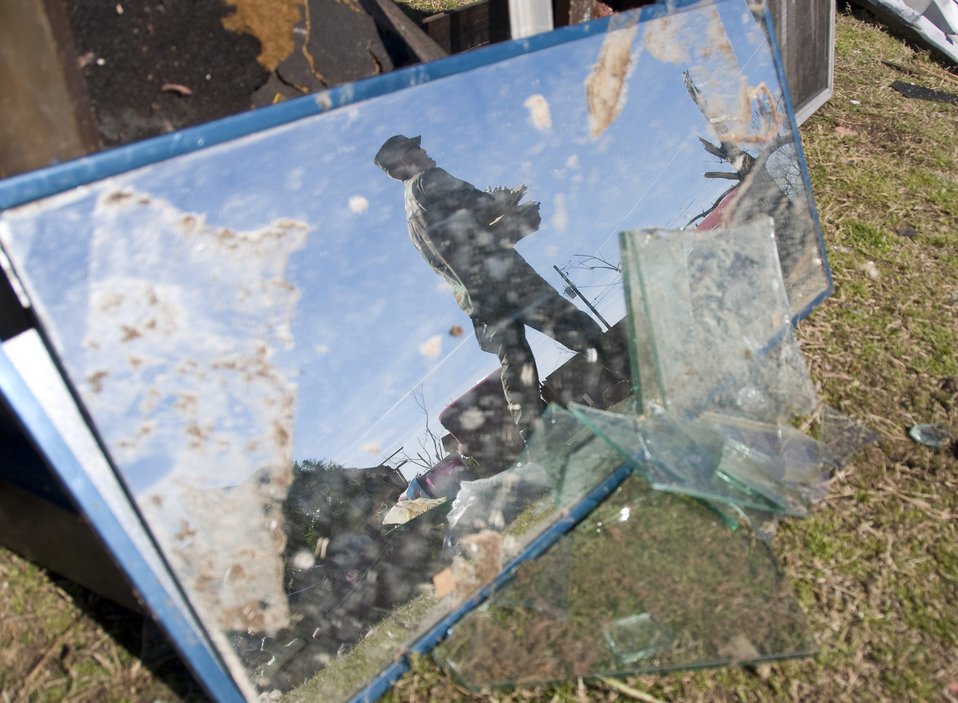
Maxwell Airmen assist city devastated by tornado

Capt. Joseph Timberlake is seen through a mirror as he collects debris amongst the wreckage of a home Feb. 19 in Prattville, Ala. More than 65 Officer Training School basic officer trainees and 20 other Airmen assigned to Maxwell Air Force Base, Ala., volunteered to help organize and clear debris from the city located 15 miles northwest of the base after the town was hit by a tornado. Latest estimates indicate that more than 150 home were destroyed and 760 homes were damaged in a series of storms with 150 mph winds. Of those homes, approximately 25 military homes were destroyed and 170 were damaged. Captain Timberlake is an Officer Training School instructor.